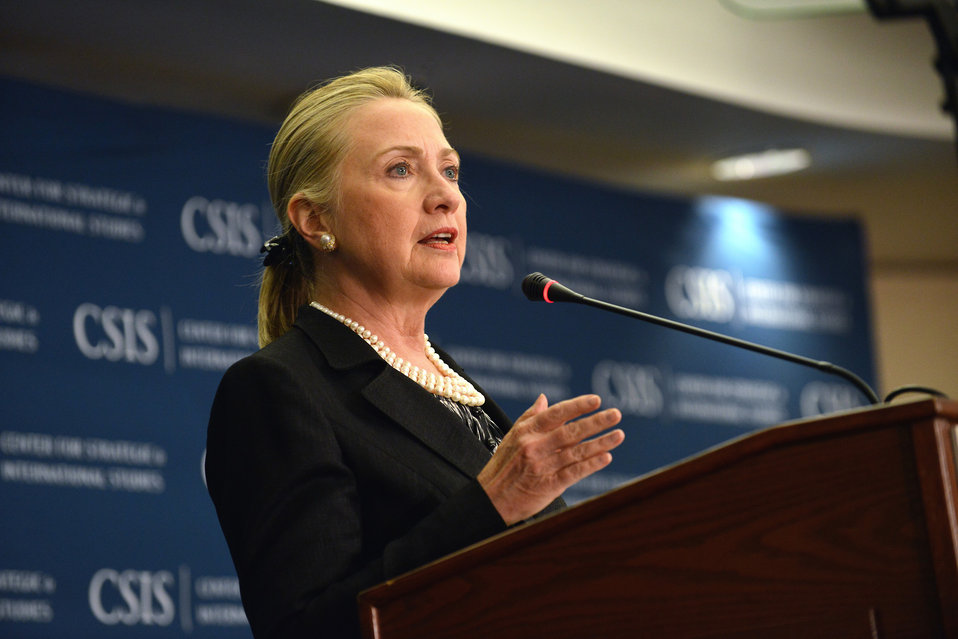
Secretary Clinton Delivers Remarks on Democratic Transitions in the Maghreb

U.S. Secretary of State Hillary Rodham Clinton delivers remarks on Democratic Transitions in the Maghreb at the Center for Strategic and International Studies (CSIS) in Washington, D.C., October 12, 2012.